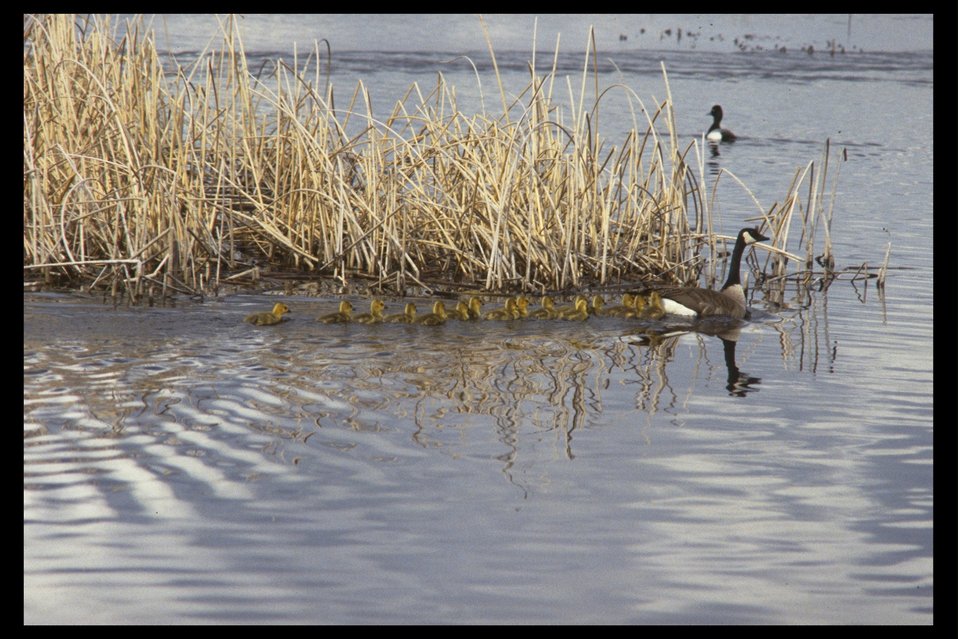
Canada Goose with 16 Goslings in the Klamath Wildlife Refuge.